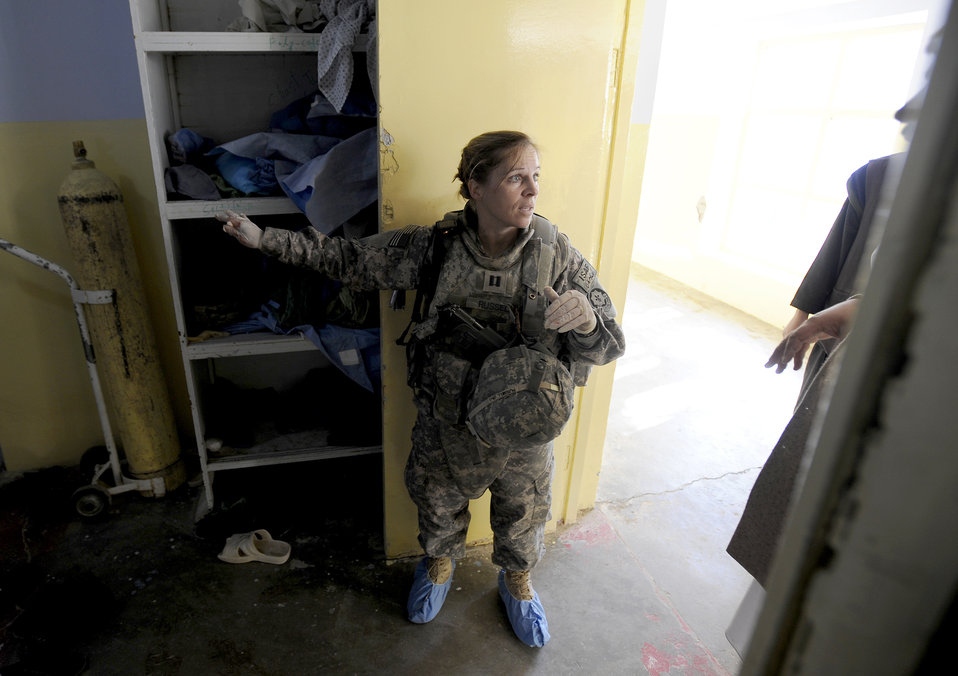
Nine medevaced from PRT Zabul after tragic accident

Capt. Dawn Russell talks with Afghan doctors at Zabul Provincial Hospital after a civilian bus rolled over, leaving seven dead and more than 30 injured Nov. 30, 2010, just outside Qalat City, Afghanistan.